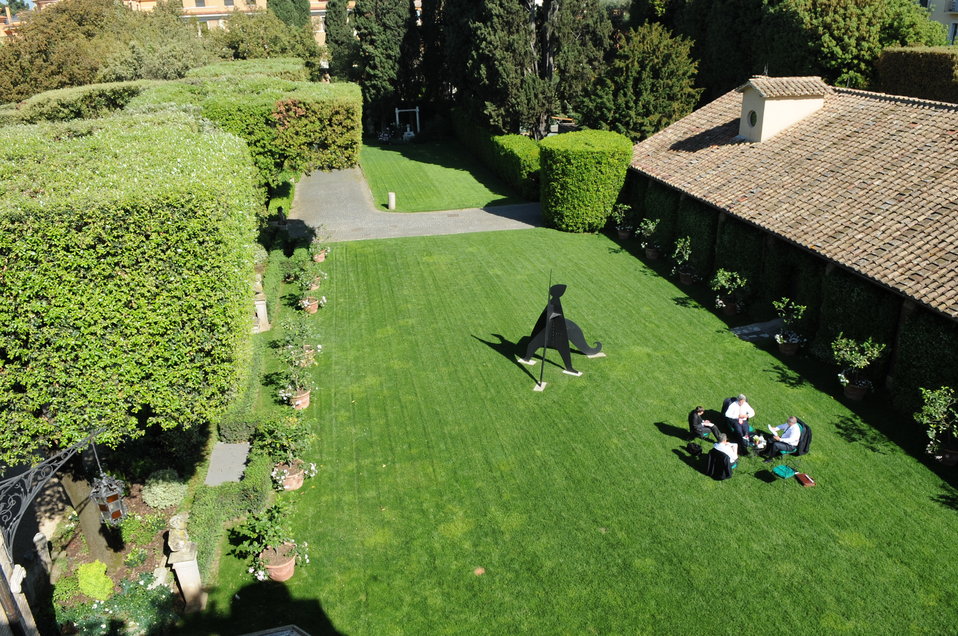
Secretary Kerry Meets With Jordanian Foreign Minister Judeh

U.S. Secretary of State John Kerry meets with Jordanian Foreign Minister Nasser Judeh on the back lawn of Villa Taverna, the U.S. Ambassador's residence in Rome, Italy, on May 9, 2013.